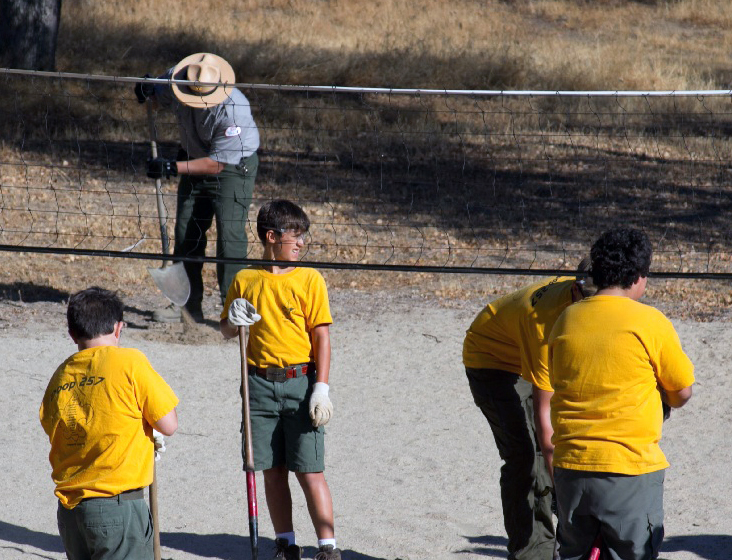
NPLD 2013 USACE Sacramento District

Boy Scouts with Troop 257, Clovis, Calif., help condition the sand volleyball court at Hensley Lake, the U.S. Army Corps of Engineers Sacramento District park near Raymond, Calif., during National Public Lands Day, Sept. 28, 2013.